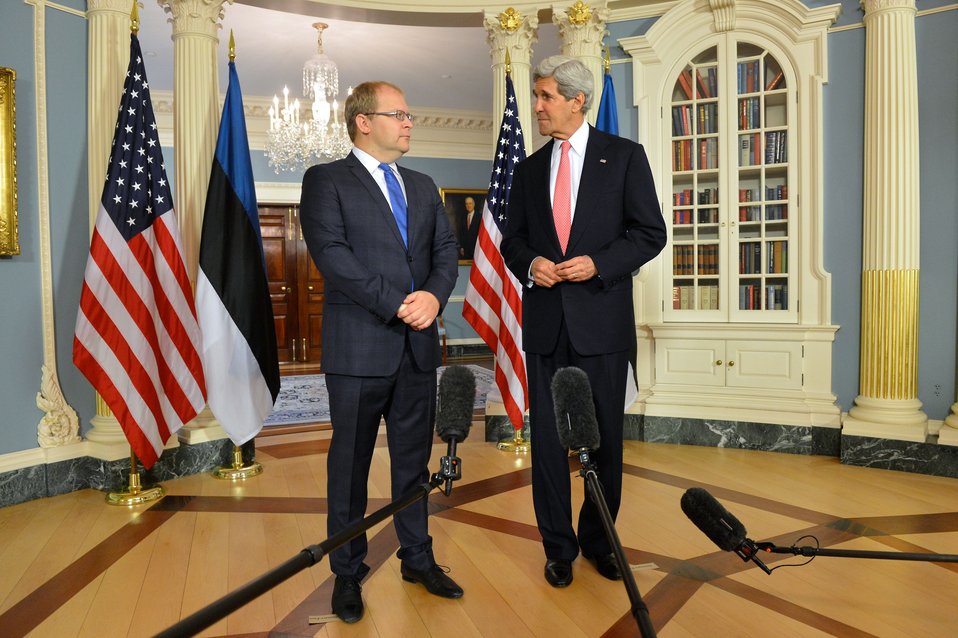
Secretary Kerry and Estonian Foreign Minister Paet Address Reporters

U.S. Secretary of State John Kerry and Estonian Foreign Minister Urmas Paet address reporters before their bilateral meeting at the U.S. Department of State in Washington, D.C., on May 29, 2014.